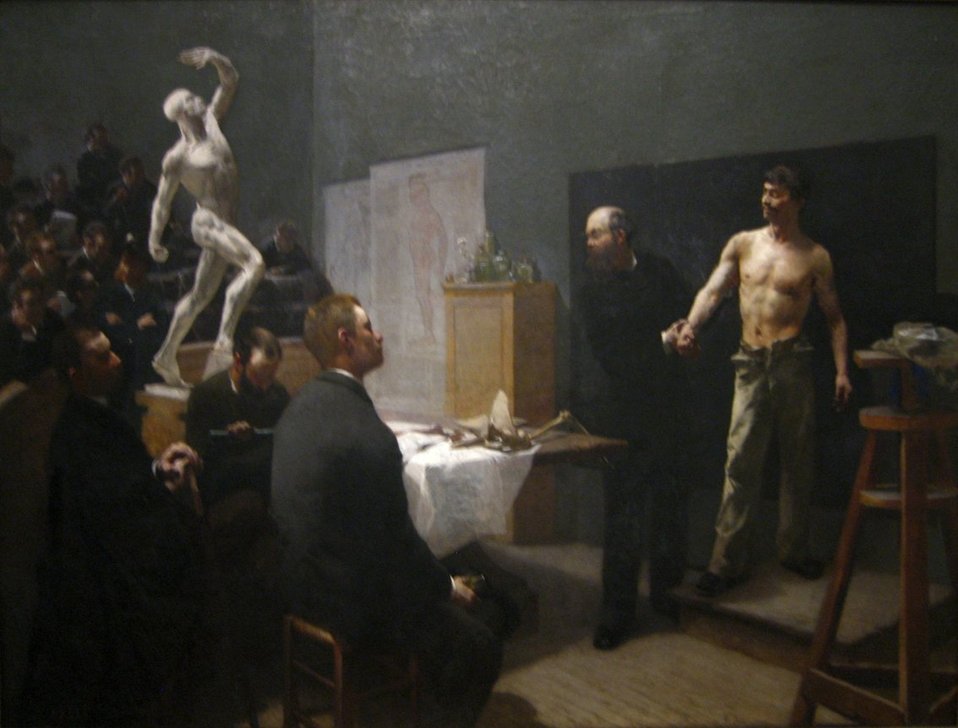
'The Anatomy Class at the Ecole des Beaux Arts', oil on canvas painting by François Sallé, 1888, Art Gallery of New South Wales